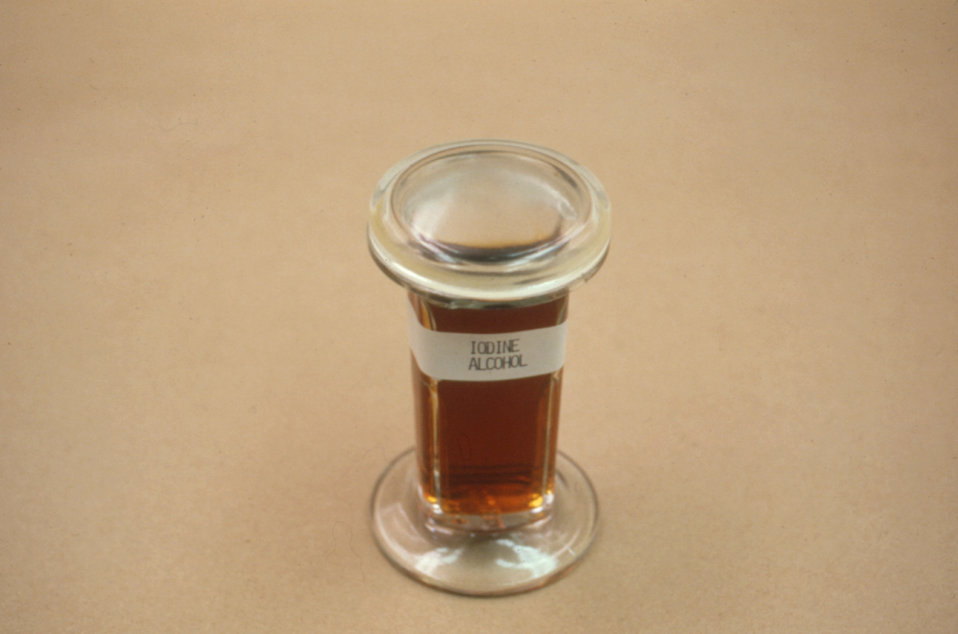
This bottle contains an iodine/alcohol solution used in staining fecal smears in a parasitology lab.